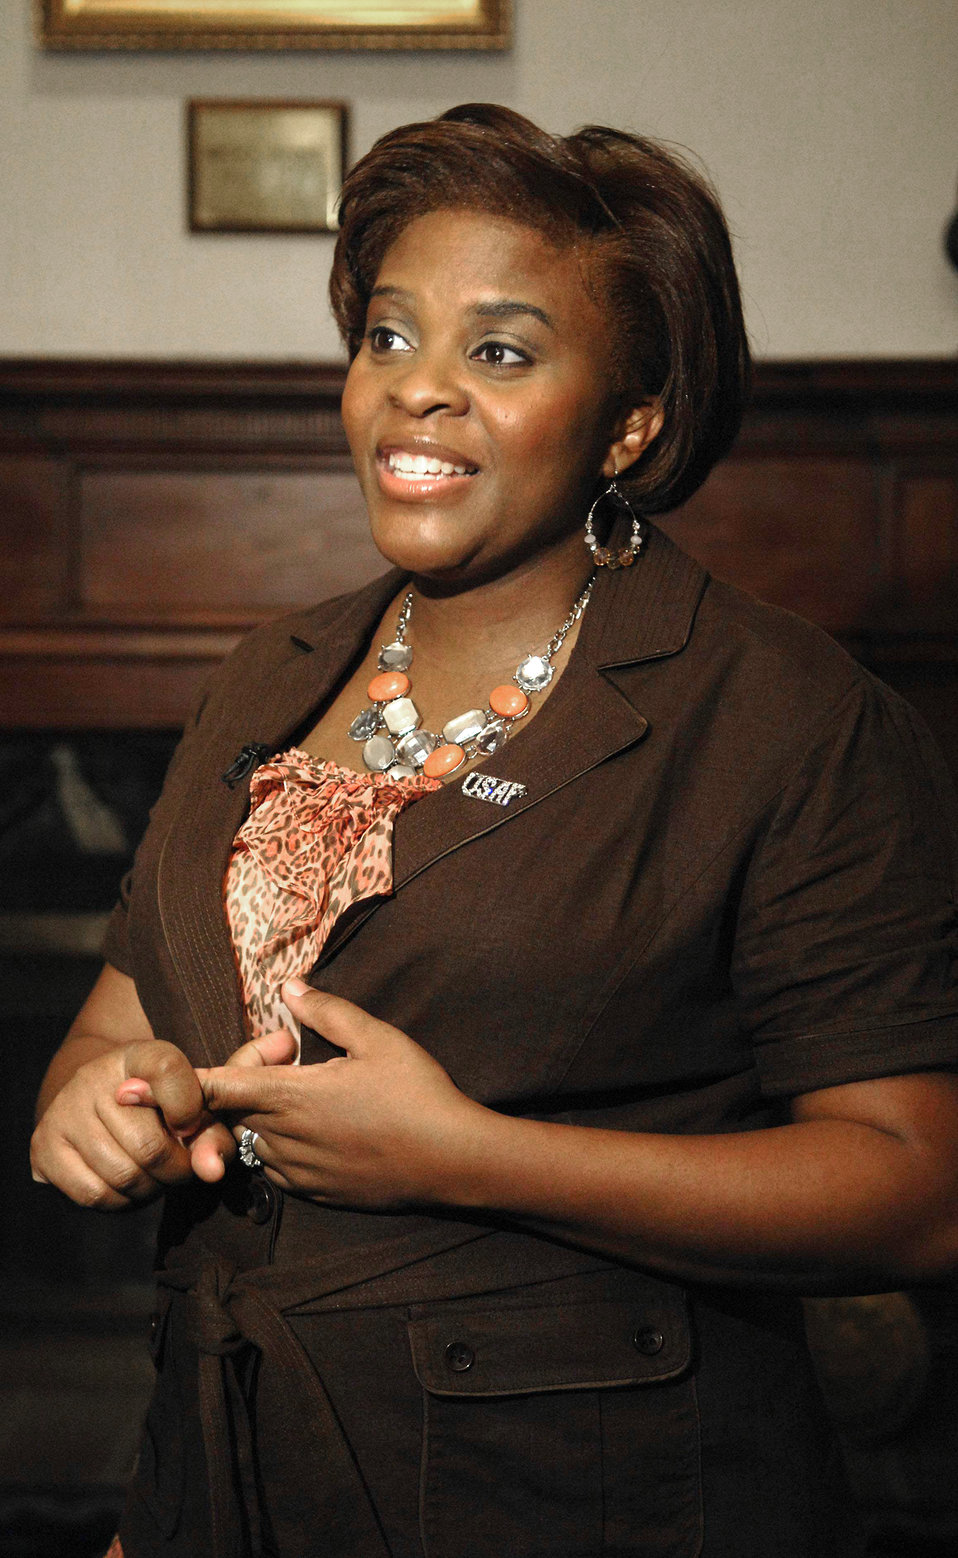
Mil Spouse of the Year

Lori Bell, the 2010 Military Spouse of the Year, talks about her achievement and the military spouses and moms support website she created. The website, National Association of Military Moms and Spouses, is a forum for spouses and moms of military members to ask questions to others with similar experiences. The Military Spouse of the Year award, given by the Military Spouse magazine, is an annual event that is part of Military Appreciation Day.